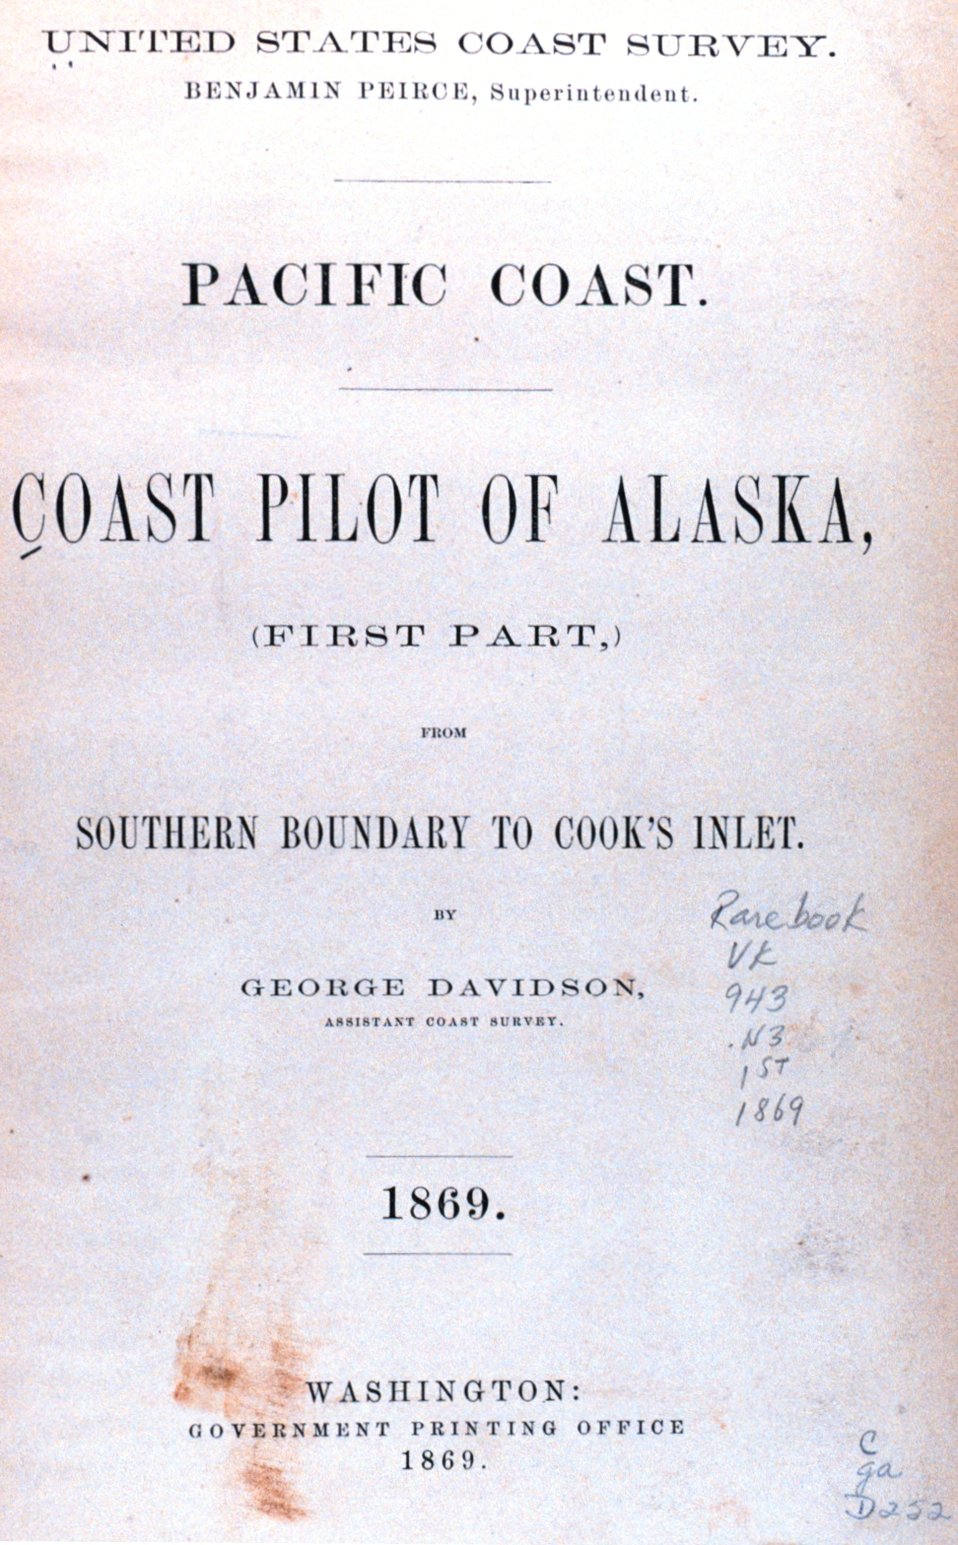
Title page of Coast Pilot of Alaska by George Davidson, 1869. In: 'Coast Pilot of Alaska, (First Part,) ....' by George Davidson, 1869. Library Call Number VK943 .N3 1st 1869.